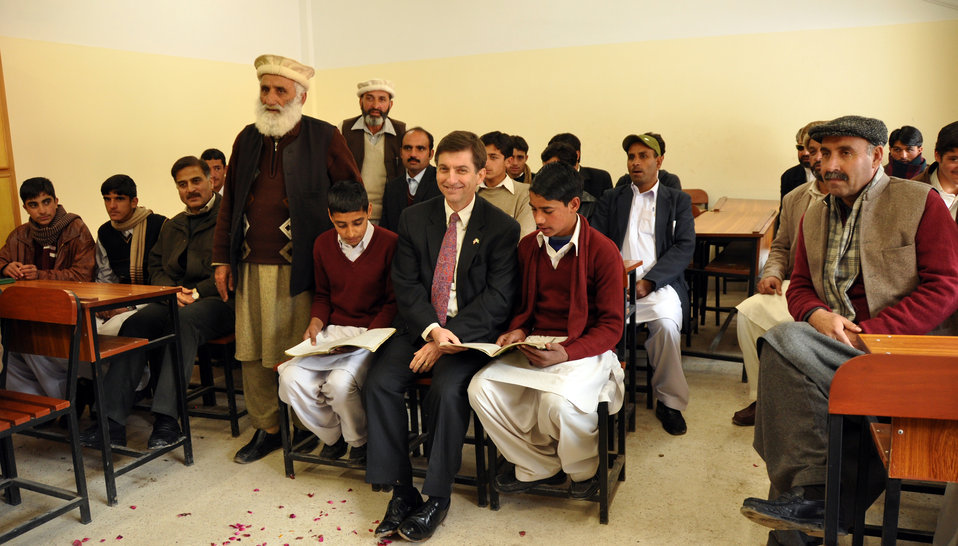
Government Boys’ Higher Secondary School Rera

Bagh, February 24, 2011 – USAID/Pakistan Mission Director Andrew Sisson with students in a classroom at the Government Boys’ Higher Secondary School Rera. The building was heavily damaged during the 2005 earthquake. Now the school has been reconstructed and furnished with assistance from the U.S. Agency for International Development and the Government of Pakistan.